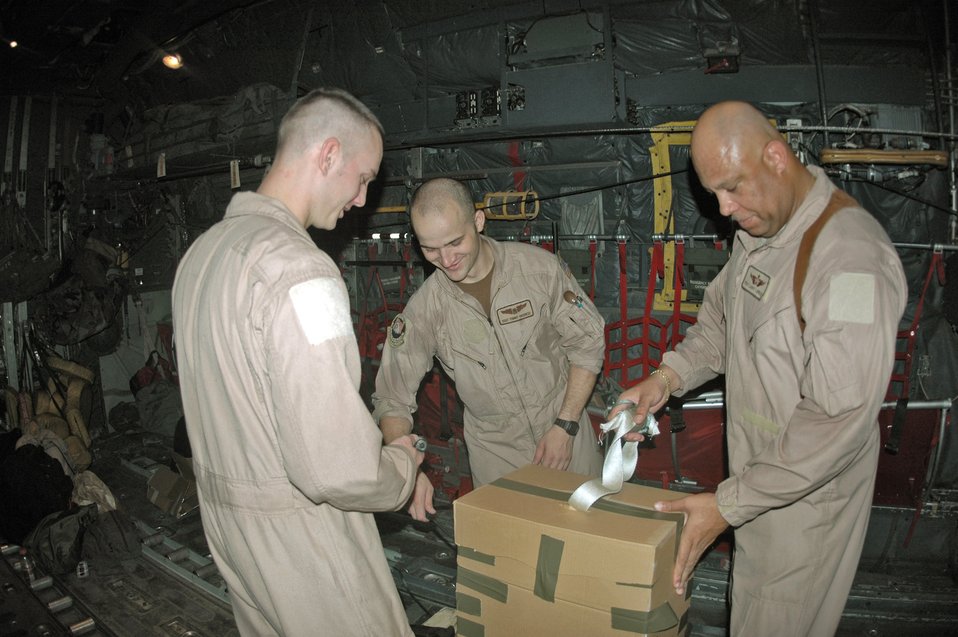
Loadmasters: night life of C-130 mission hackers

Airman 1st Class Zachary Kelhi (left to right), Staff Sgt. Tommy Greeness and Master Sgt. Larry Lambert prepare a box of leaflets for an airdrop mission where they will spread leaflets over Basra, Iraq, preparing the battlefield for future operations. The three Airmen are C-130 Hercules loadmasters with the 746th Expeditionary Airlift Squadron.